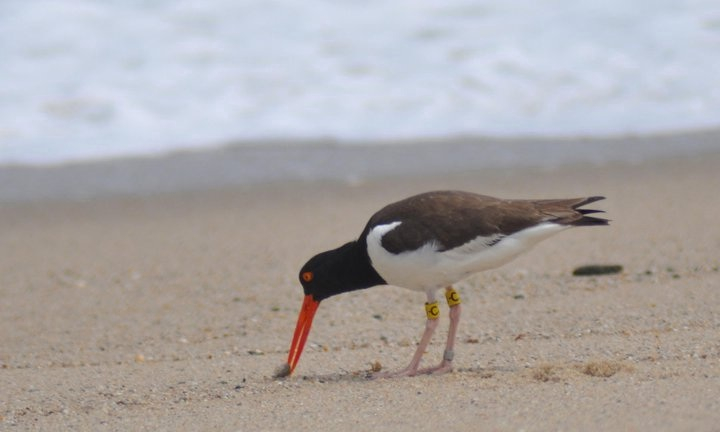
american oystercatcher eats mole crab

Nantucket National Wildlife Refuge